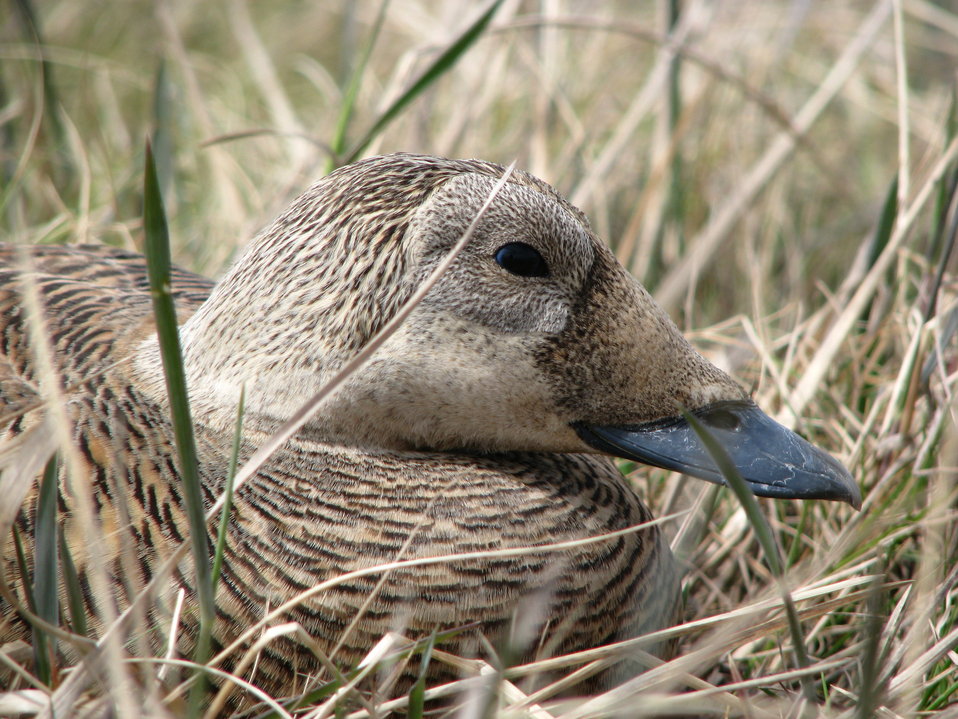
Female Spectacled Eider close-up

Yukon Delta NWR